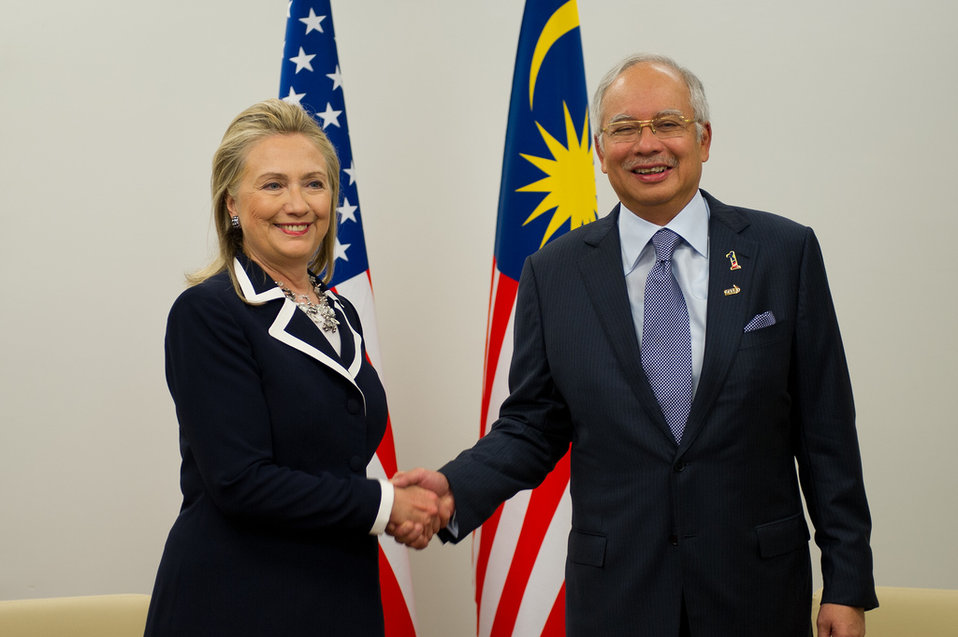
Secretary Clinton Meets With Malaysian Prime Minister Najib Razak

U.S. Secretary of State Hillary Rodham Clinton shakes hands with Malaysian Prime Minister Najib Razak before their meeting during the Asia-Pacific Economic Cooperation (APEC) Leaders' Week in Vladivostok, Russia, September 9, 2012.